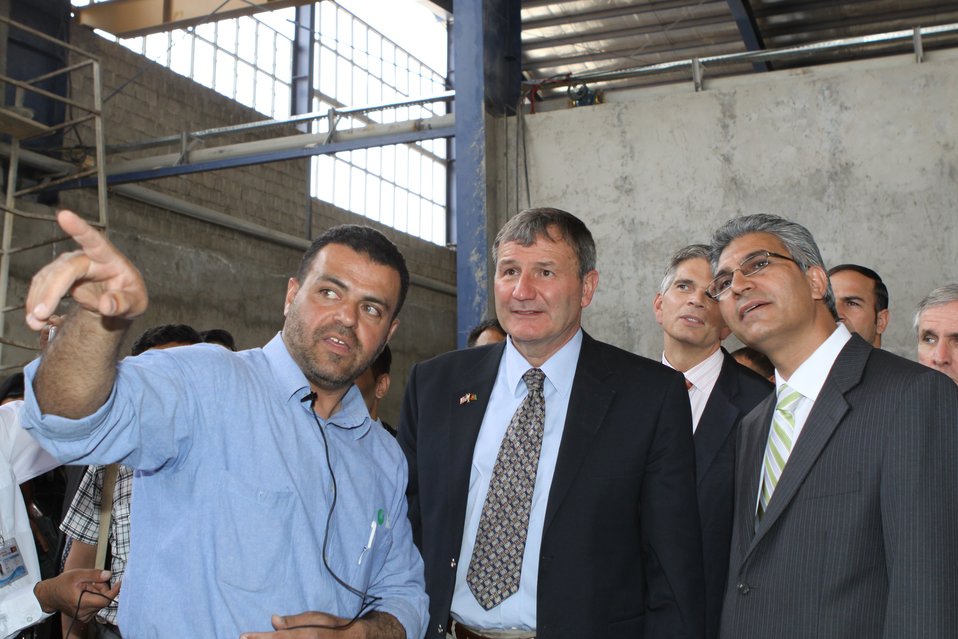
100525 Hirat Marble Conference 439